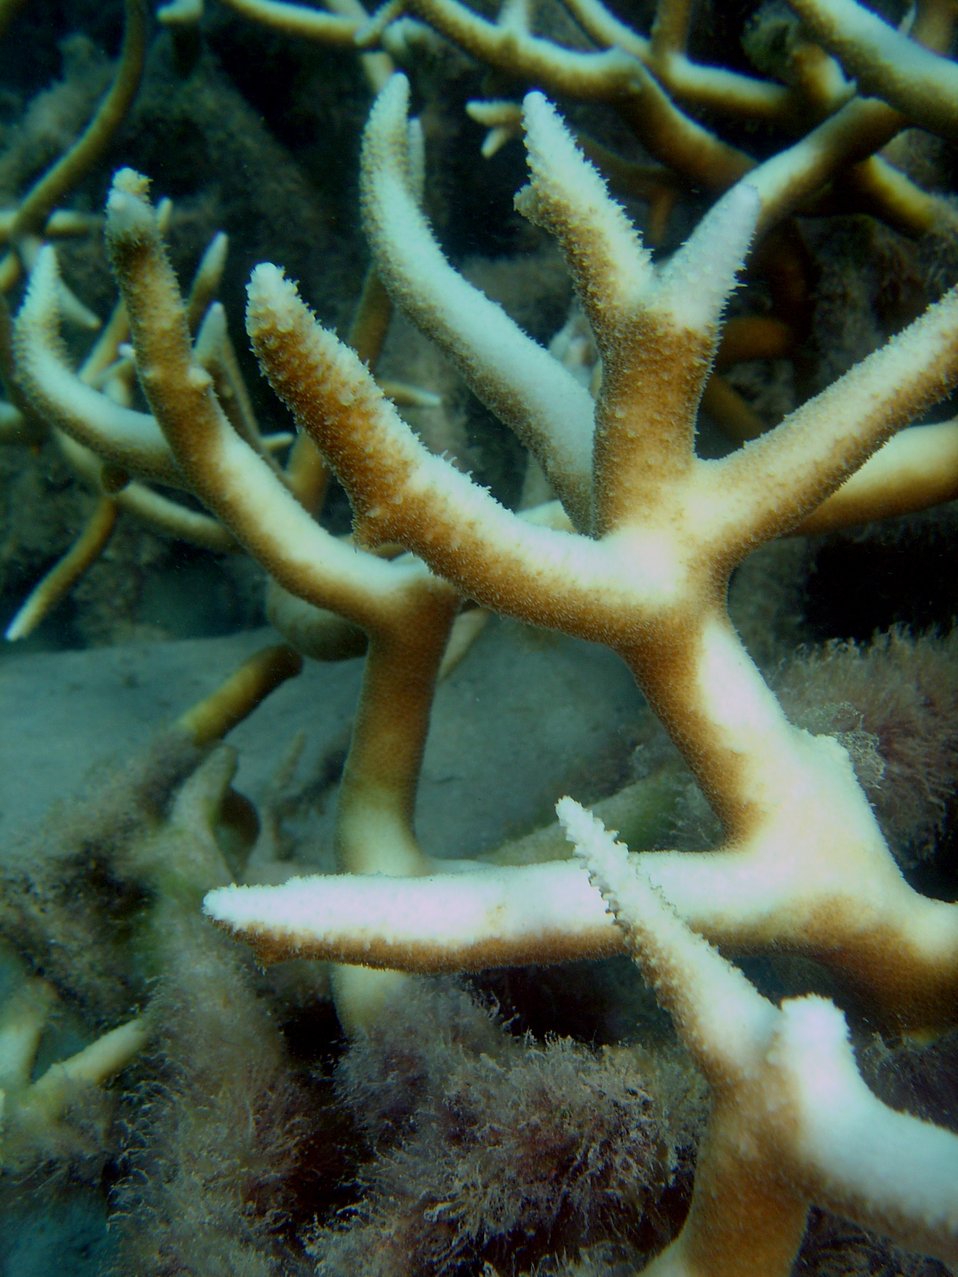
Coral bleaching